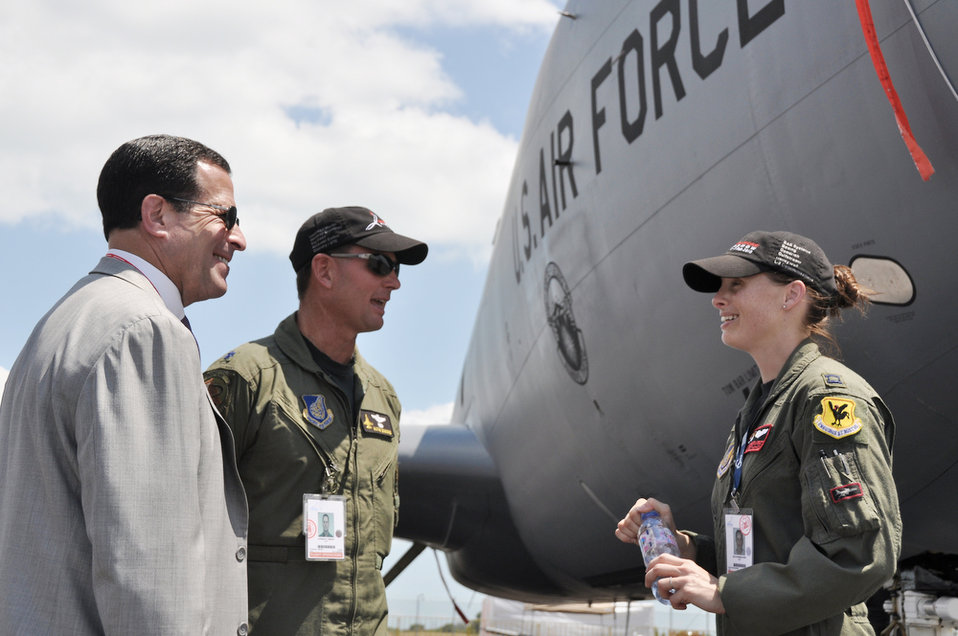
Undersecretary of Air Force visits Singapore air show

Undersecretary of the Air Force for international affairs Bruce Lemkin meets with Lt. Col. Norman Dimond and Capt. Hollie Disselhorst as the undersecretary tours the U.S. military KC-135 Stratotanker static display during Singapore Airshow 2010 Feb. 3, 2010, in Changi, Singapore. Colonel Dimond and Captain Disselhorst are KC-135 Stratotanker pilots from the 18th Wing at Kadena Air Base, Japan.